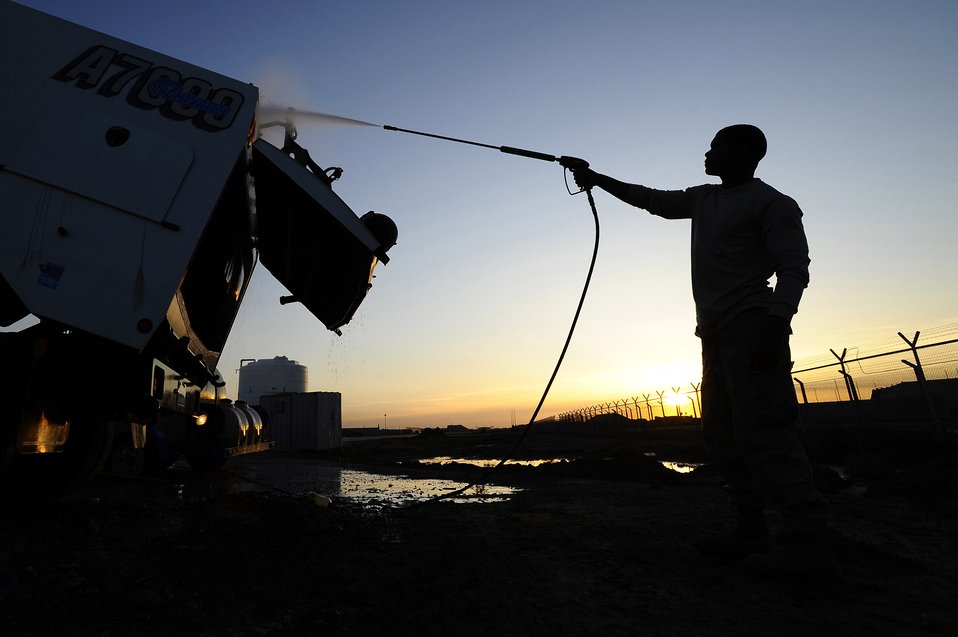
Wash it down

Near dusk on Dec. 5, Staff Sgt. Monwell Chassion washes a sweeper that picks up debris on runways and taxiways at Joint Base Balad, Iraq. The sweepers are emptied and cleaned at the end of each shift. Sergeant Chassion is deployed from Hurlburt Field, Fla.